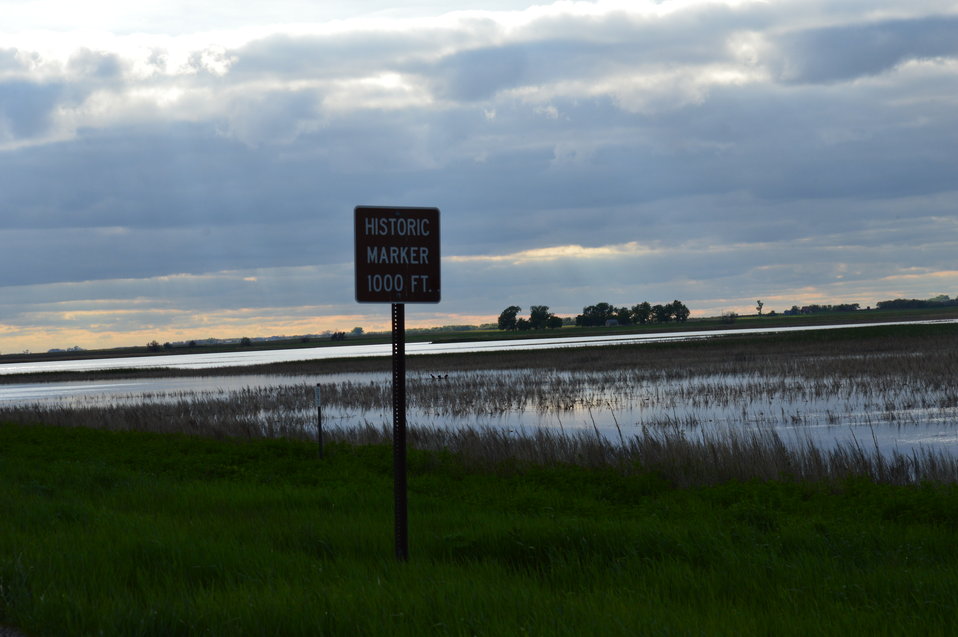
'Historic Marker' sign